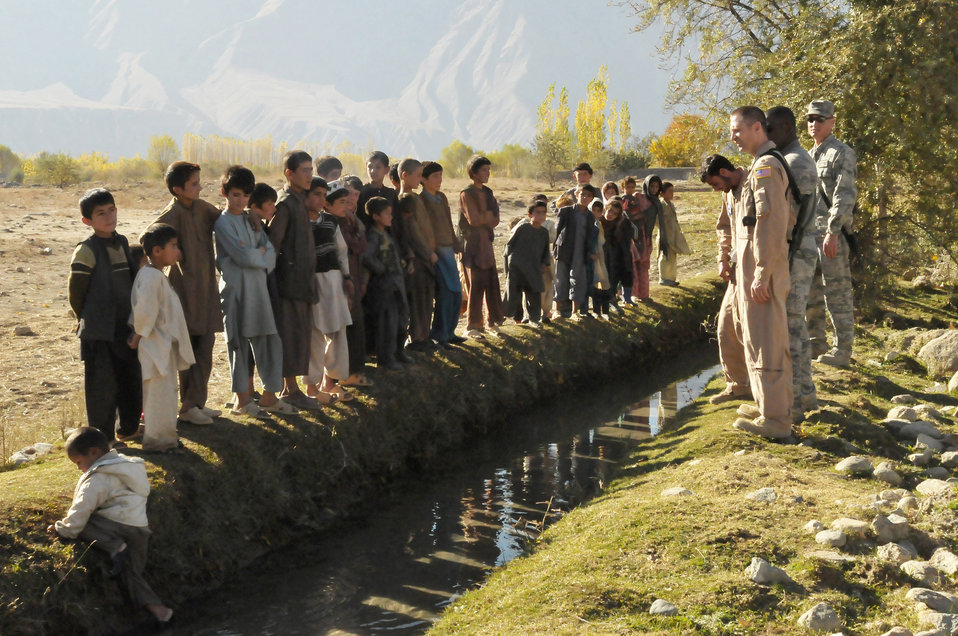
Afghan, NATO forces help bring supplies to build Afghan orphanage

Airmen from the 438th Air Expeditionary Wing greet children during a humanitarian assistance mission Nov. 11, 2010 in Baharak, Afghanistan. The Airmen, along with Afghan air force and coalition forces, visited the area to support operations aimed at building an orphanage in the area.